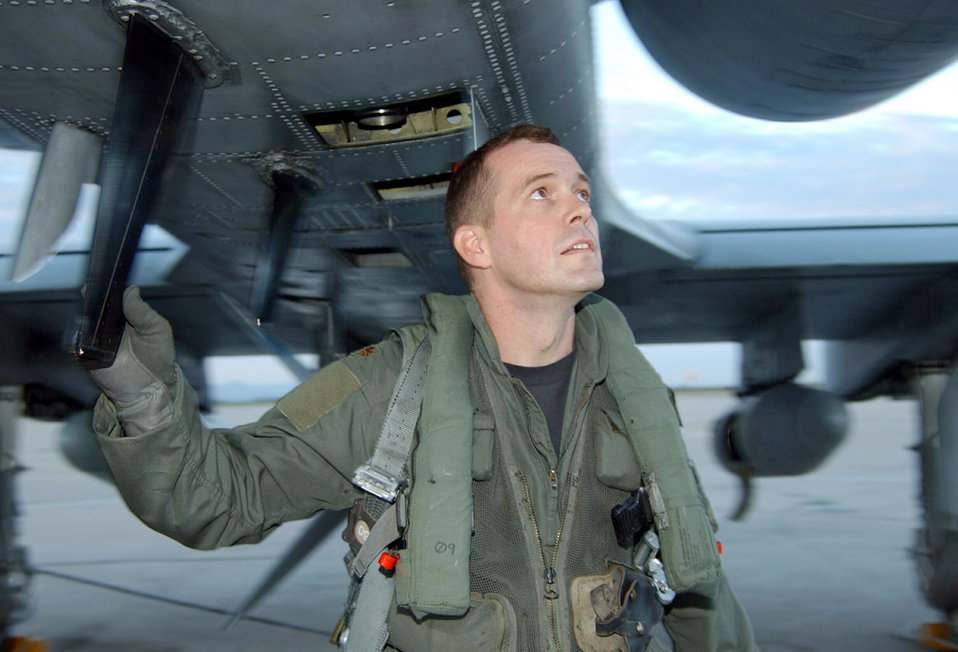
Bushwacker 04-07

DAVIS-MONTHAN AIR FORCE BASE, Ariz. (AFPN) -- Maj. Francis McDonough from the 354th Fighter Squadron here performs a preflight inspection on his A-10 Thunderbolt II before his mission July 25. The squadron is taking part in a local operational readiness exercise called Bushwhacker 04-07.